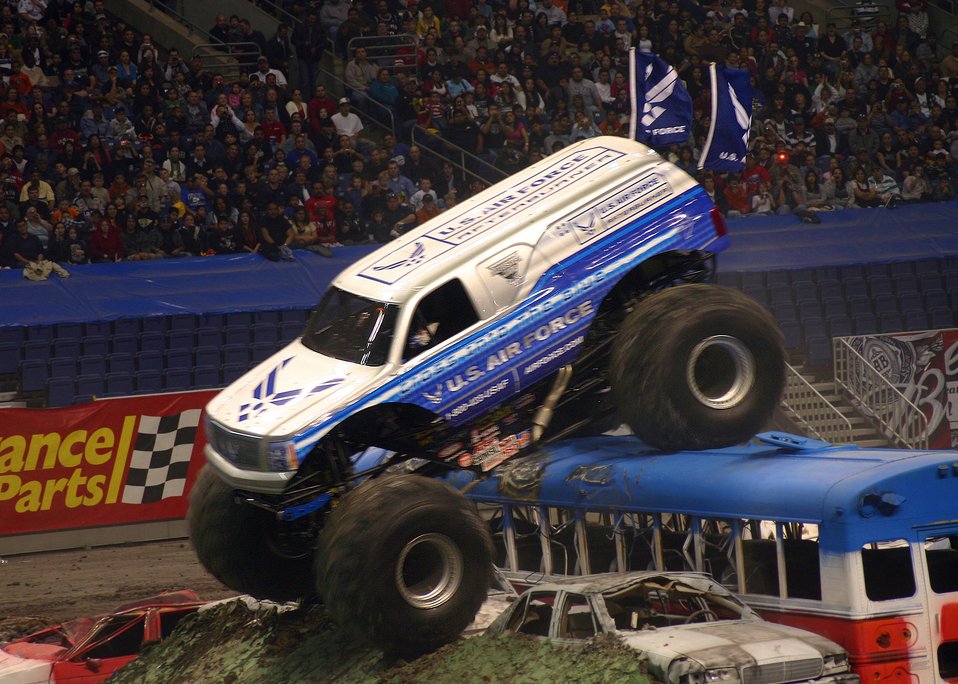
Afterburner flies high in Monster Jam

The Air Force Afterburner monster truck, driven by Damon Bradshaw, maneuvers over a bus during the 2009 Monster Jam freestyle competition Jan. 10 at San Antonio?s Alamodome.